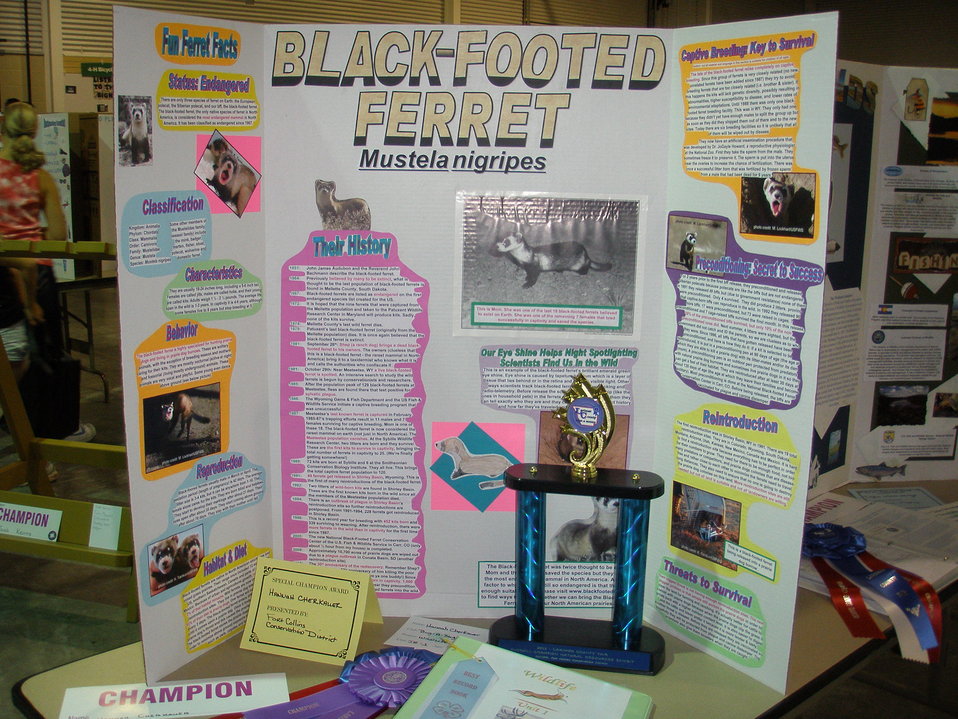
Hannah's project, pictured here, won the Larimer County Fair’s 2011 Grand Champion Award and placed fourth at the 2011 Colorado State Fair for her 4-H Black-footed Ferret project.